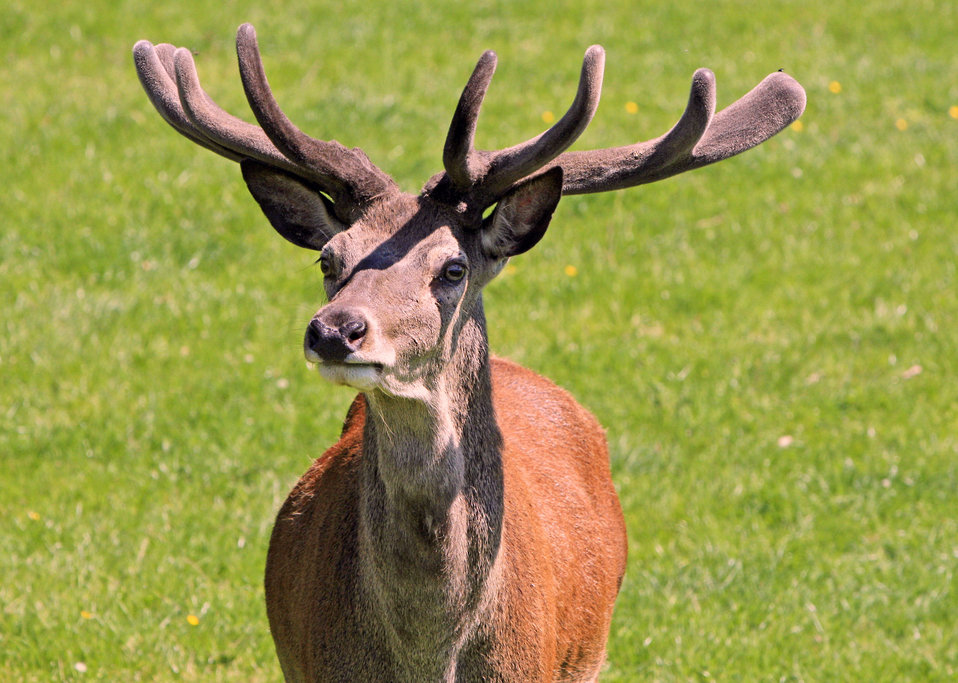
Deer stag

Close-up portrait of a male red deer stag.